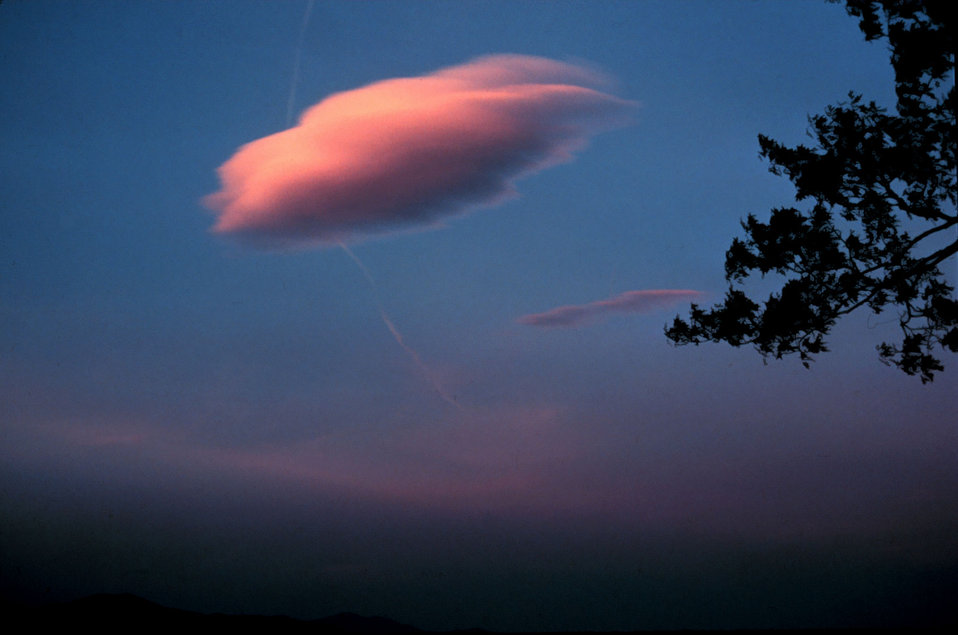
Wave cloud east of Mt. Mitchell